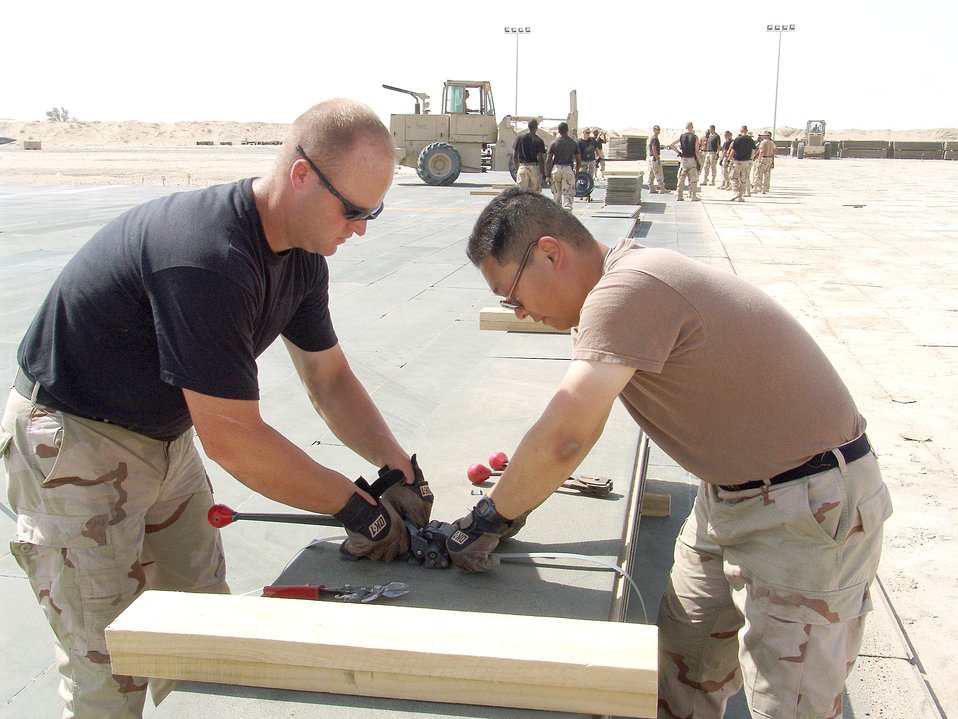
Bundle up

SOUTHWEST ASIA -- Staff Sgts. Aaron Wade (left) and Kenneth Pang bundle up metal planks that served as the temporary flightline surface in preparation for paving the ramp area at a forward-deployed location. The Airmen are assigned to the 386th Expeditionary Civil Engineer Squadron and are deployed from Misawa Air Base, Japan.